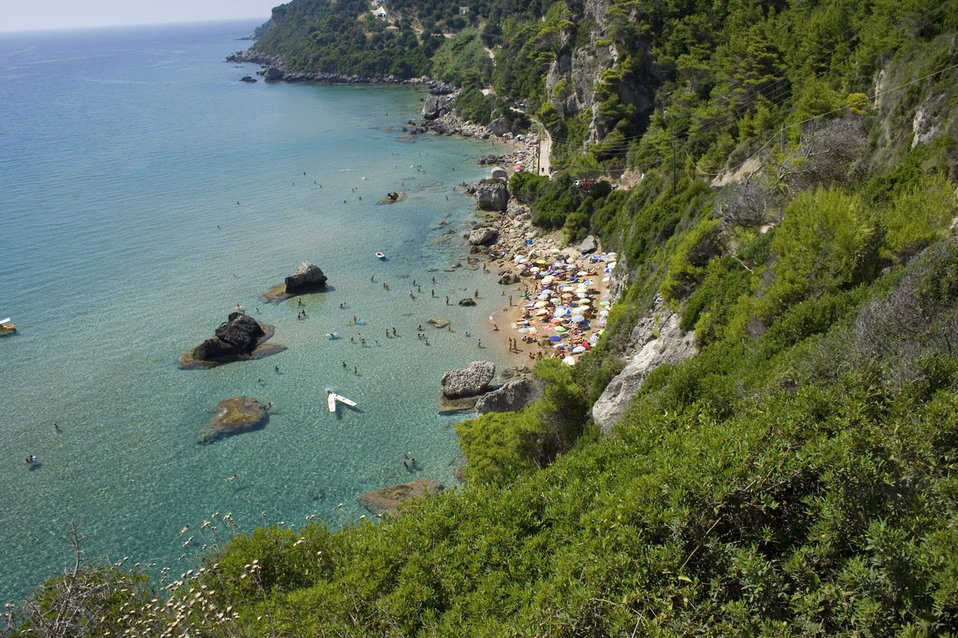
Small beach

Beautiful small beach in corfu.